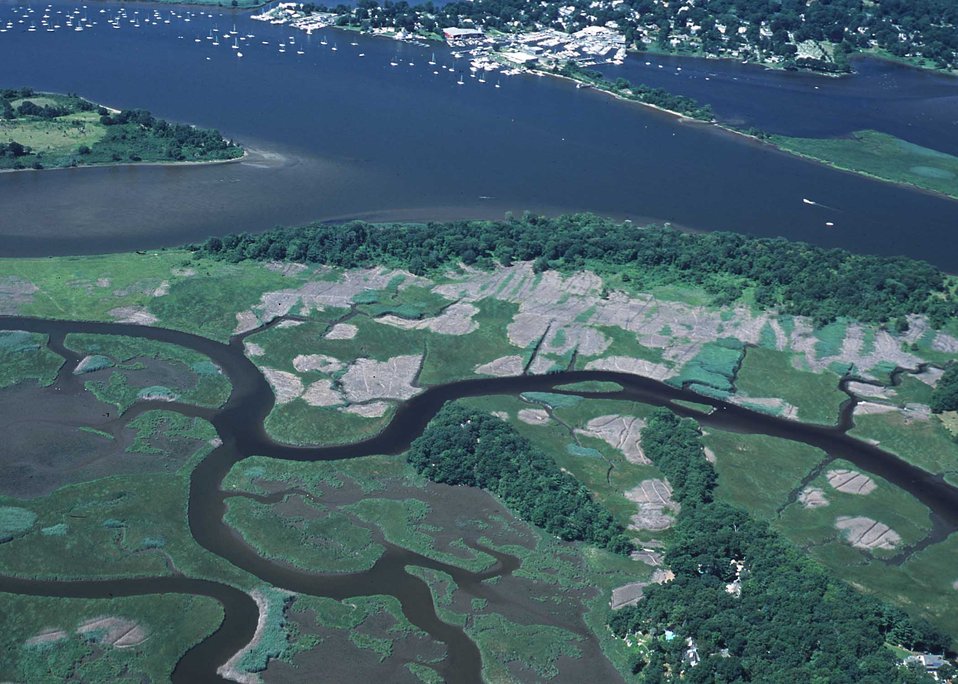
Connecticut River tideland habitat undergoing invasive plant control (light colored areas) and native plant community restoration.